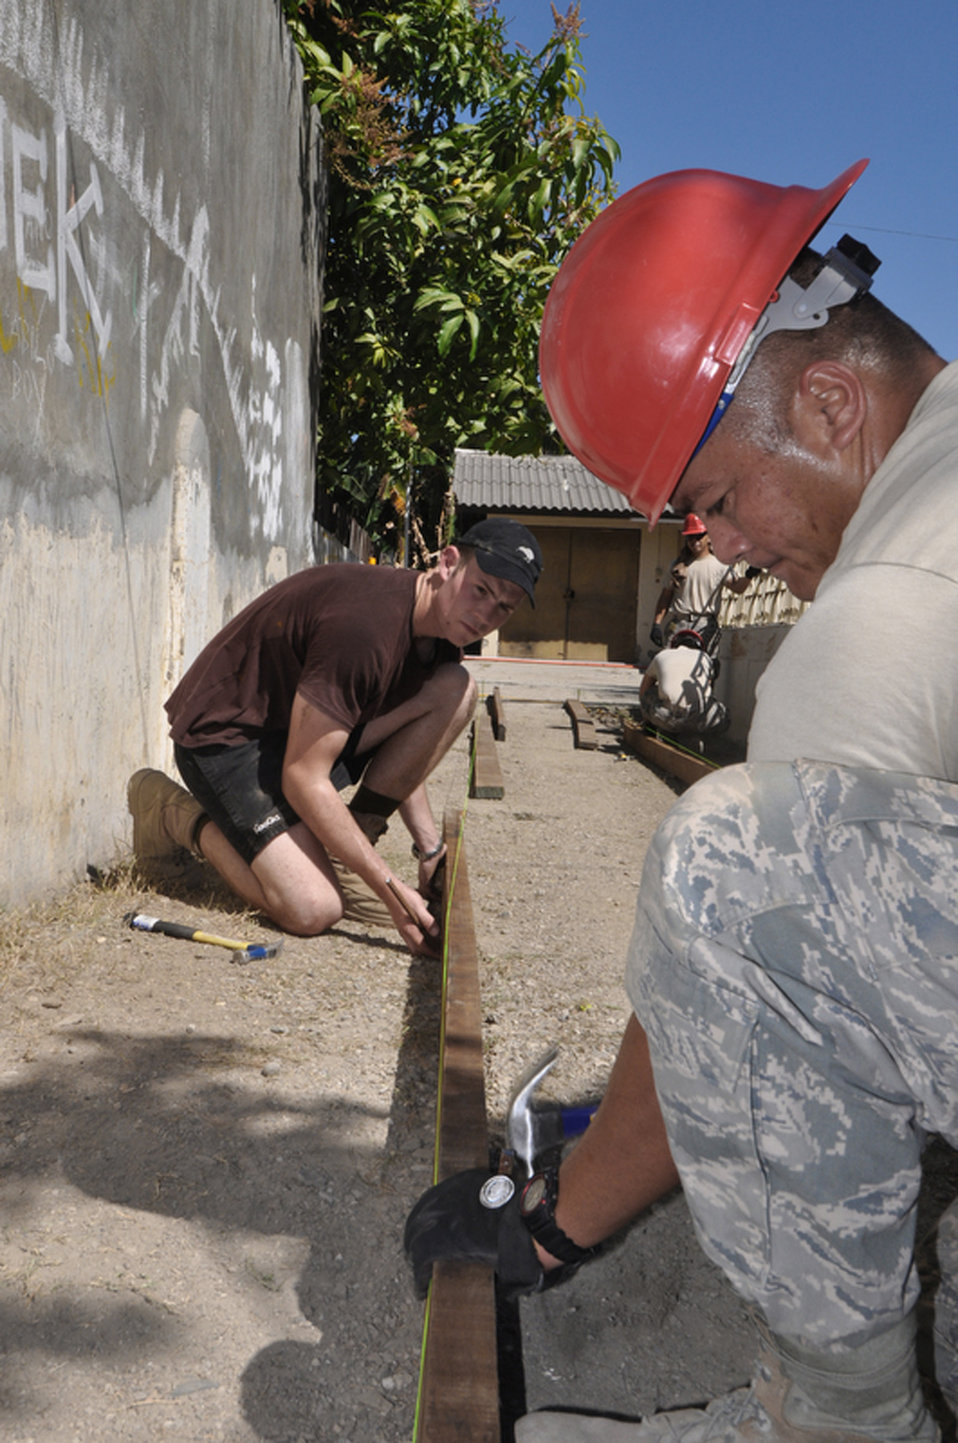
Guam Guard members leave mark in Dili

Staff Sgt. Heracleo Escobar and Sapper Jordan Matthews build the outside borders of a sidewalk outside the national hospital July 16 in Dili, Timor Leste. Sergeant Escobar is a structures craftsman with the Guam Air National Guard's 254th RED HORSE Squadron at Andersen Air Force Base, Guam. Sapper Matthews is a combat engineer with the Royal New Zealand Army's 2nd Fields Squadron. The two units were working together as part of Pacific Angel 2009, a Pacific Air Forces humanitarian assistance operation.